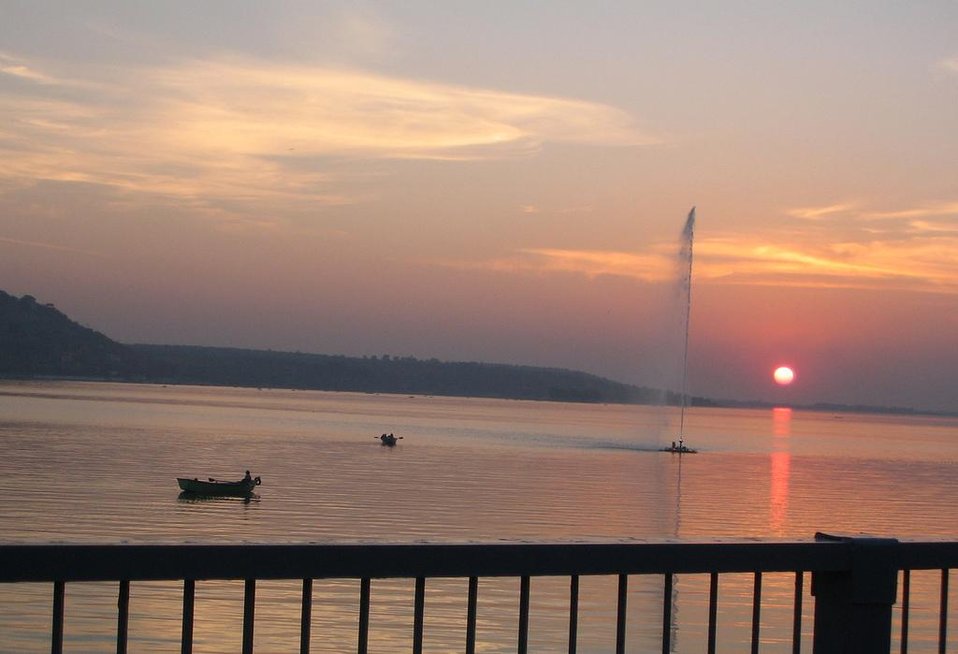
Bada Talaab from VIP road